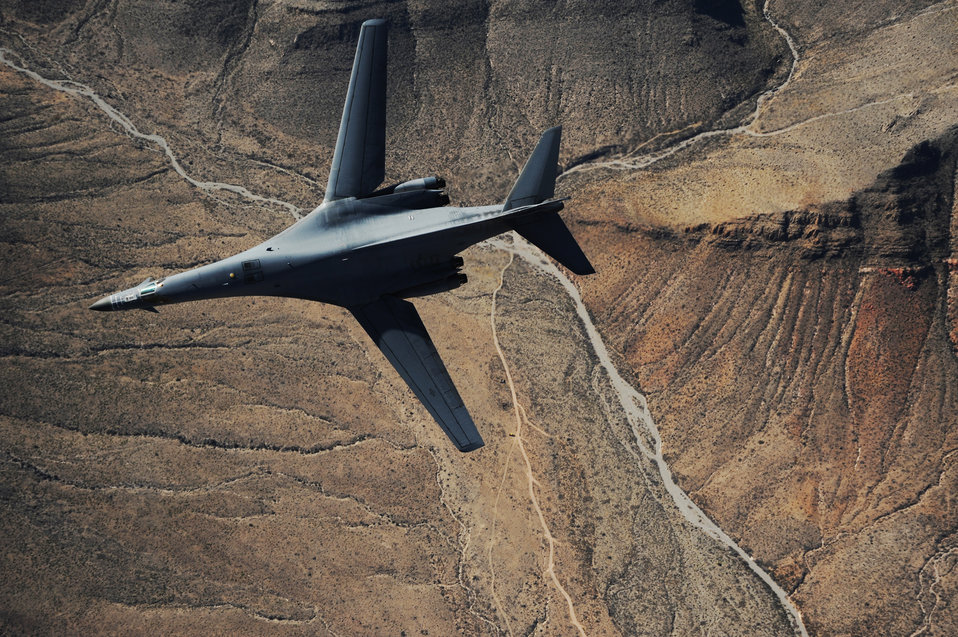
B1-B Training Mission

A B-1B Lancer assigned to the 28th Bomb Squadron, Dyess Air Force Base, Texas, maneuvers over New Mexico during a training mission Feb. 24, 2010.